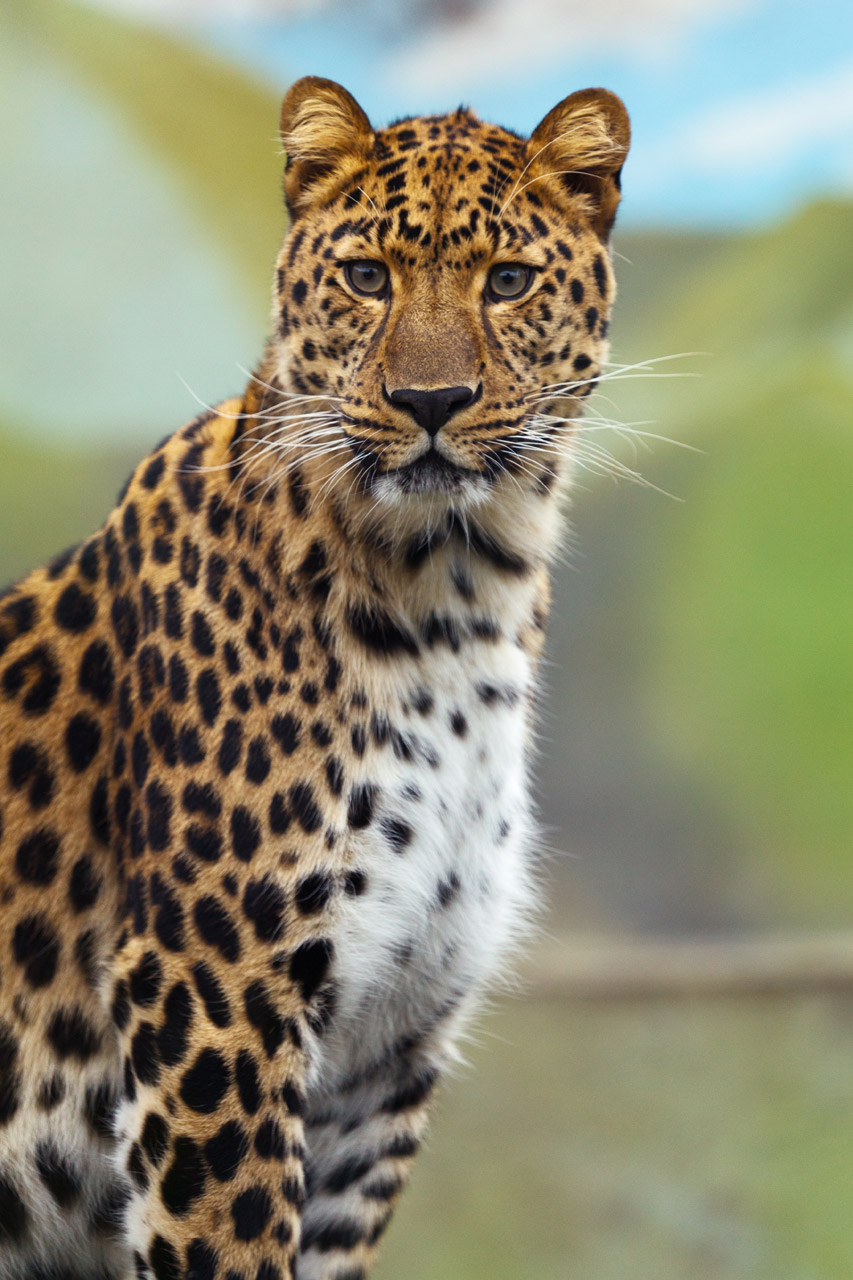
Leopard portrait.